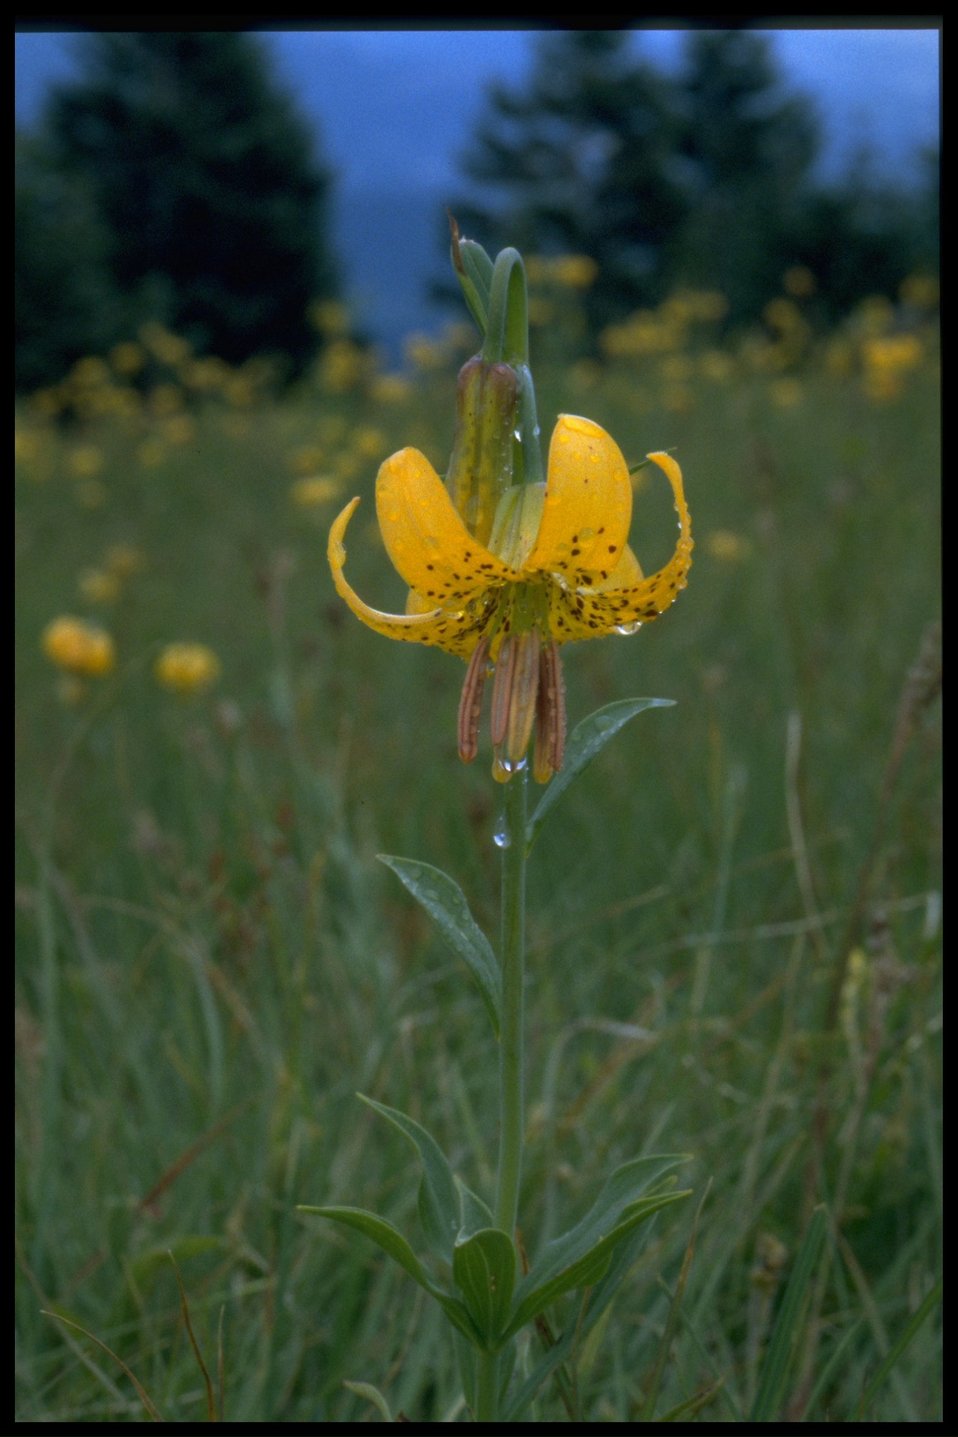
Medium shot of tiger lily, Lilium columbianum.